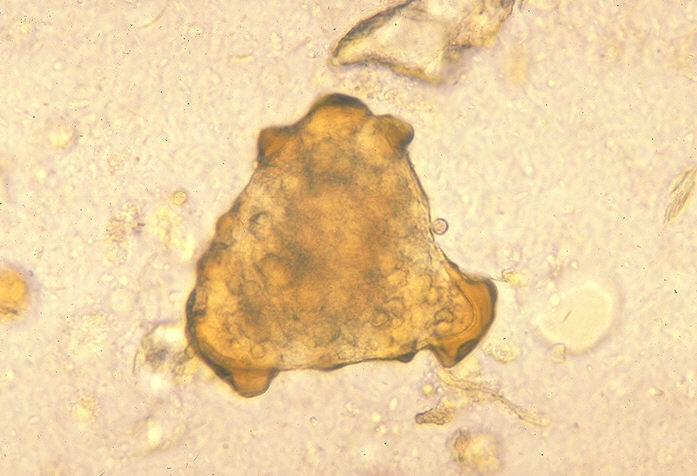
Infertile egg of Ascaris lumbricoides.